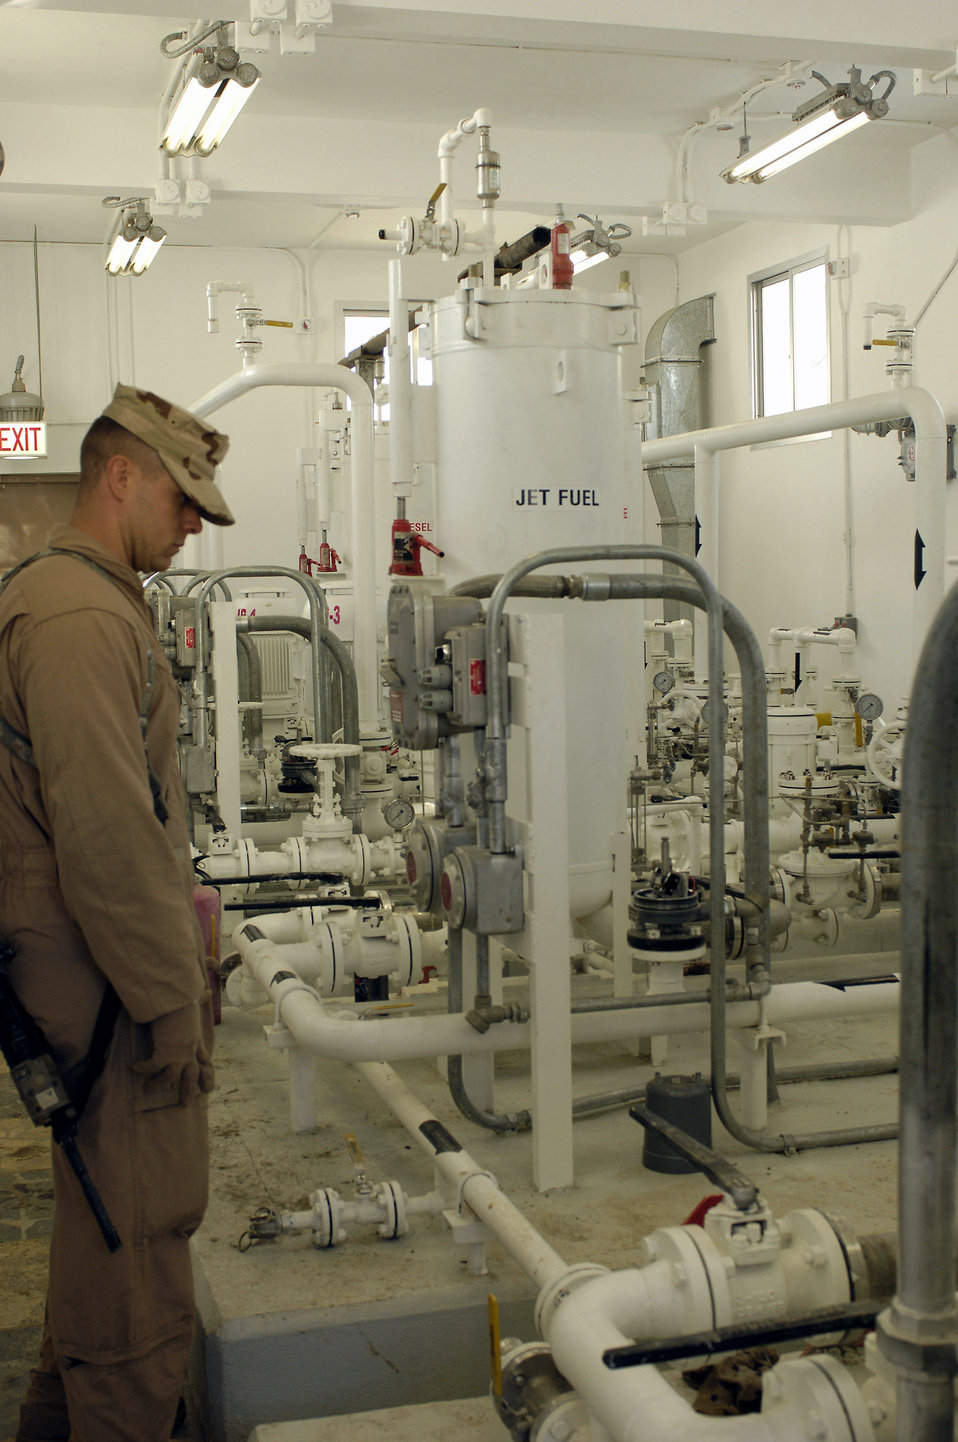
U.S., Afghan forces unite to open fuel depot

Staff Sgt. Jason King checks valve configurations for a system set up in one of the class III fuels depot pump houses Feb. 17 at Khuja Rawash in Kabul, Afghanistan. Sergeant King is assigned to the 755th Air Expeditionary Group with the Logistics Embedded Training Team of Combined Security Transition Command-Afghanistan.